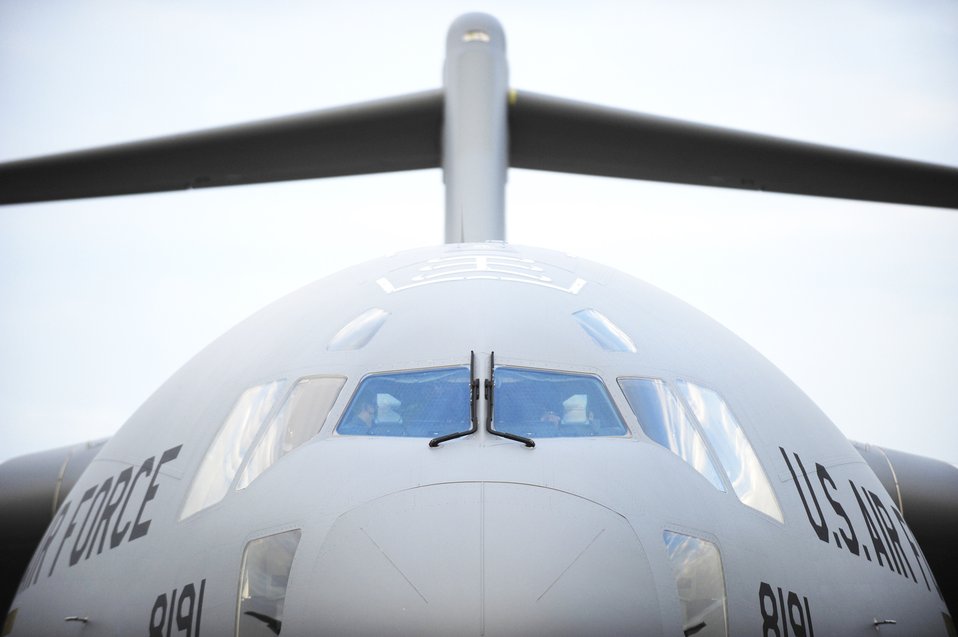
Here's looking at you

A C-17 Globemaster III and crew, from the 437th Air Mobility Wing at Charleston Air Force Base, S.C., prepare to participate in the relief effort to Haiti in the aftermath of the devastating earthquake.